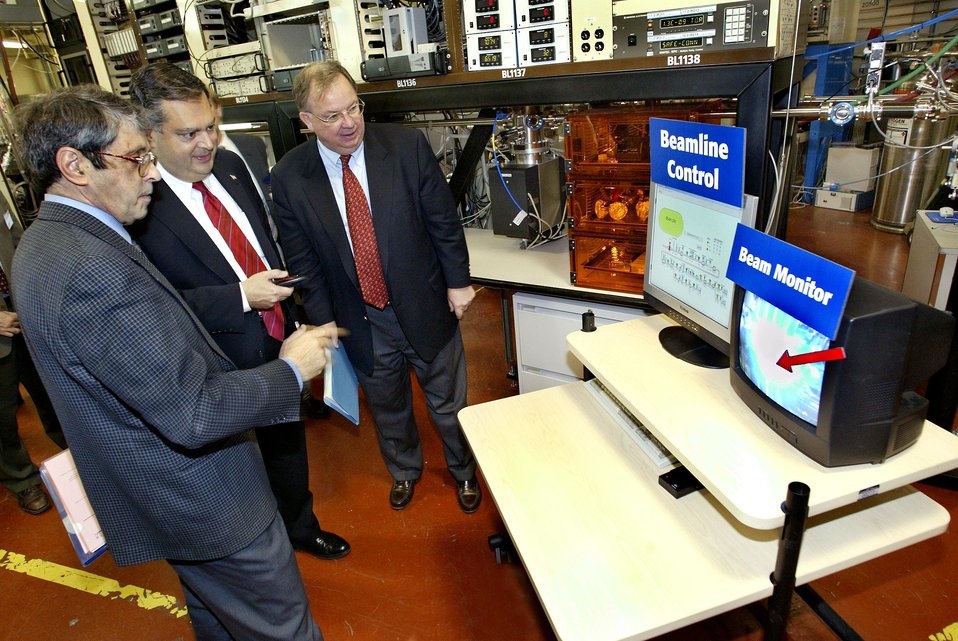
SECRETARY OF ENERGY ABRAHAM USES REMOTE CONTROL TO CUT ELECTRONIC RIBBON DEDICATING LBNL'S MOLECULAR ENVIRONMENTAL SCIENCE BEAMLINE.

THE MES BEAMLINE IS A COMPONENT OF LBNL'S ADVANCED LIGHT SOURCE. THE DEDICATION TOOK PLACE ON NOVEMBER 26, 2002, WITH THE ARROW ON THE COMPUTER MONITOR POINTING TO THE FLASH ON THE SCREEN DESIGNATING THE CUTTING OF THE RIBBON. DAVID SHUH, MES BEAMLINE MANAGER IS ON THE LEFT OF THE SECRETARY AND CHARLES SHANK, DIRECTOR, LBNL, IS ON THE RIGHT.